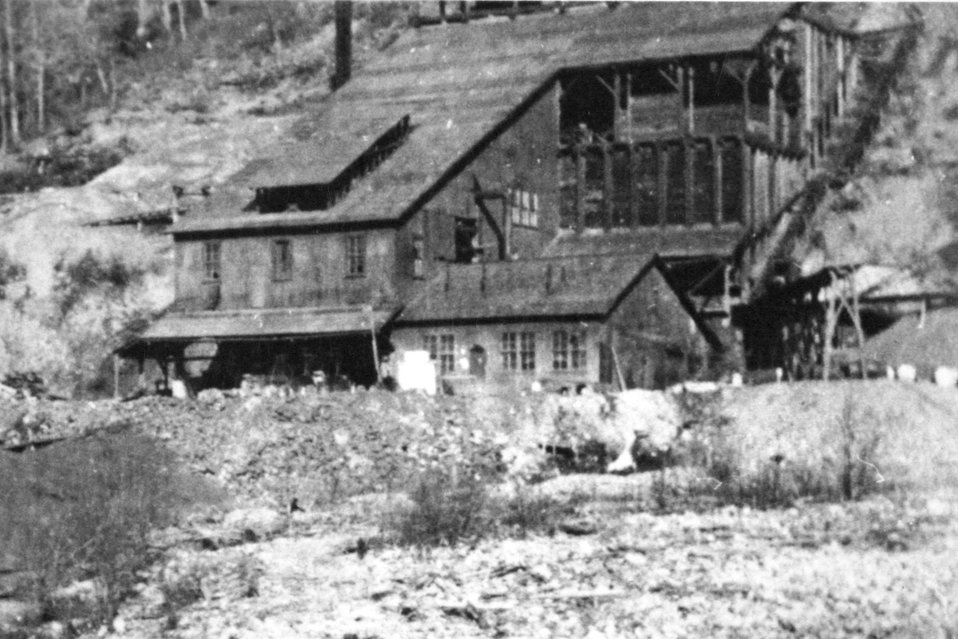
Almeda mine C. 1910 - 1911